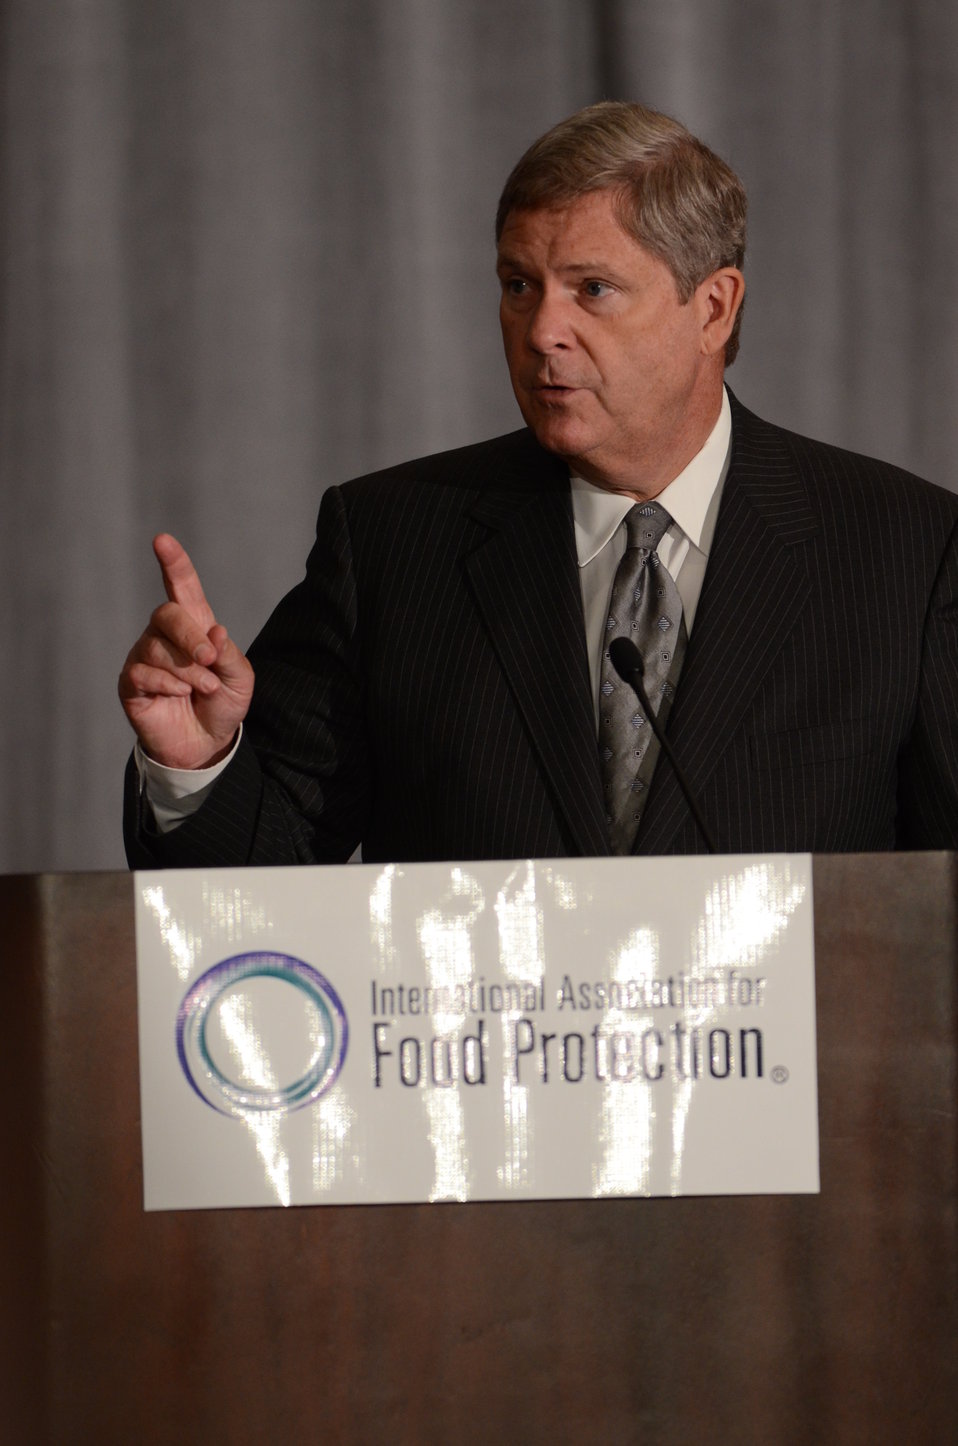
Agriculture Secretary Tom Vilsack speaks at the International Association for Food Protection (IAPP) 100th annual meeting in Milwaukee, WI, on Wednesday, August 3, 2011. IAPP is committed to providing members worldwide with a forum to exchange information on protecting the global food supply.